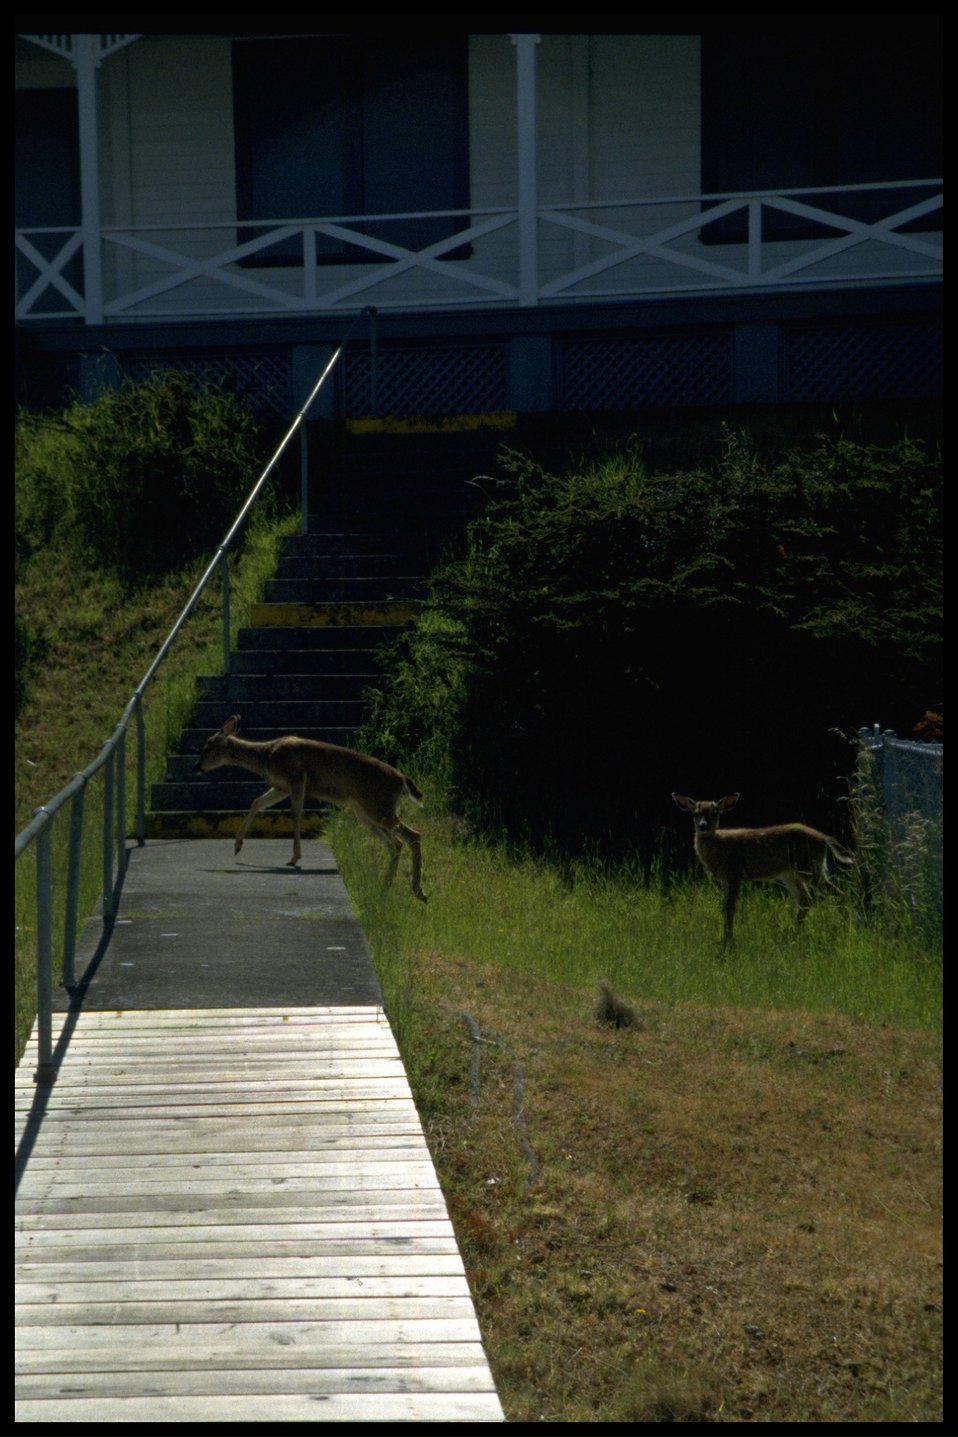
Deer walk between the Turn Point lighthouse and the living quarters.